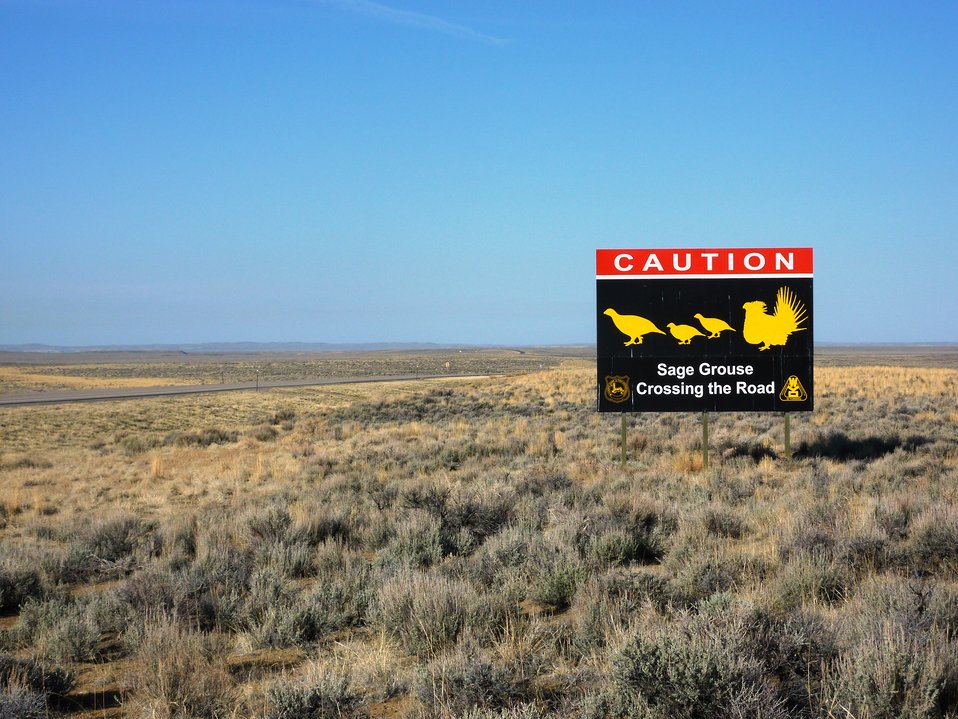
Sage-grouse Crossing!

This may be a one-of-a-kind sign. Located on Highway 28 between Farson, WY and Seedskadee NWR, it brings great awareness to the perils that sage-grouse face and how we have impacted their habitat.

Credit: Mark Bellis / USFWS

Photo Contest Entry #62